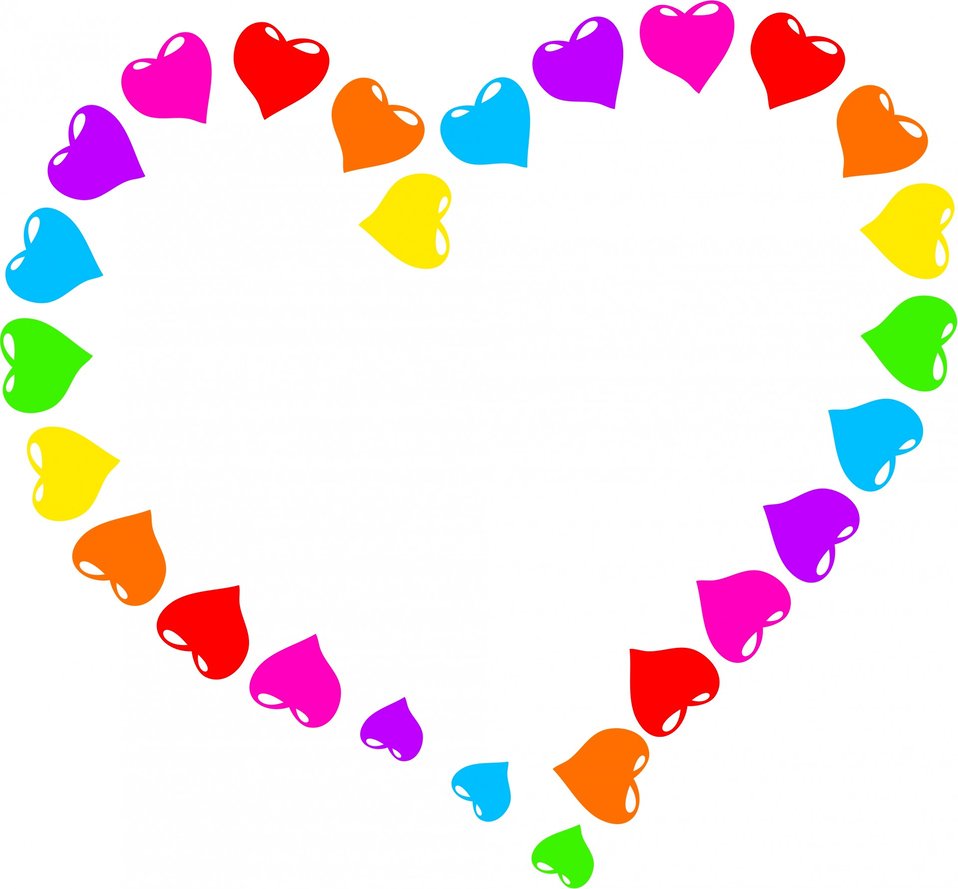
Rainbow heart clipart

Pretty rainbow love heart shape..